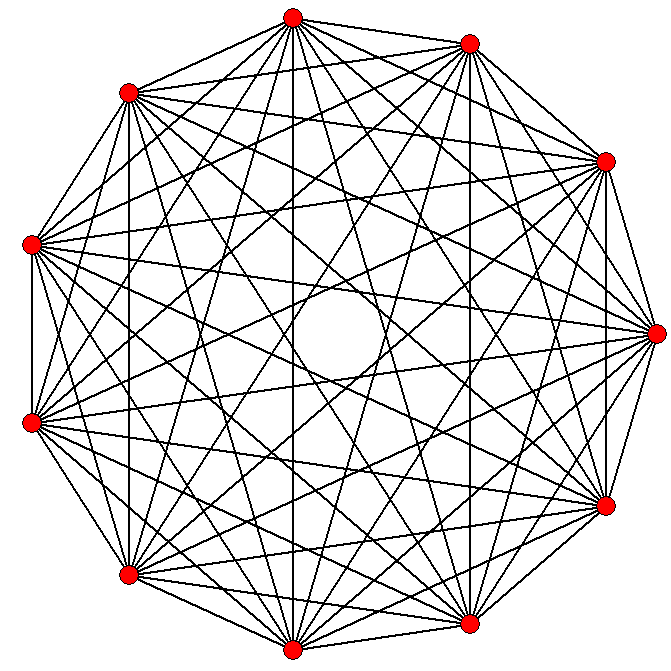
10-simplex graph